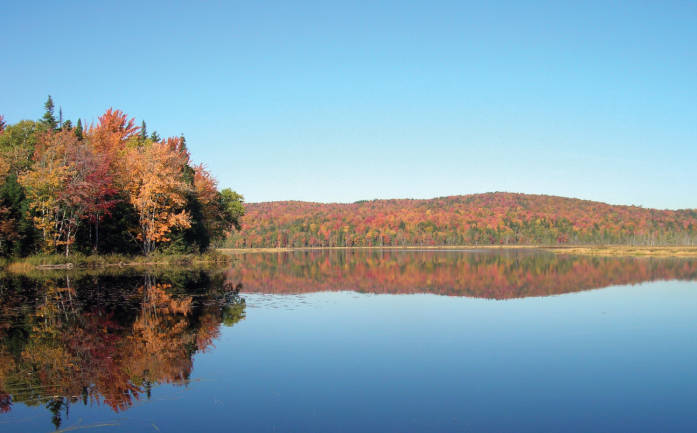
Lake Umbagog National Wildlife Refuge, ME